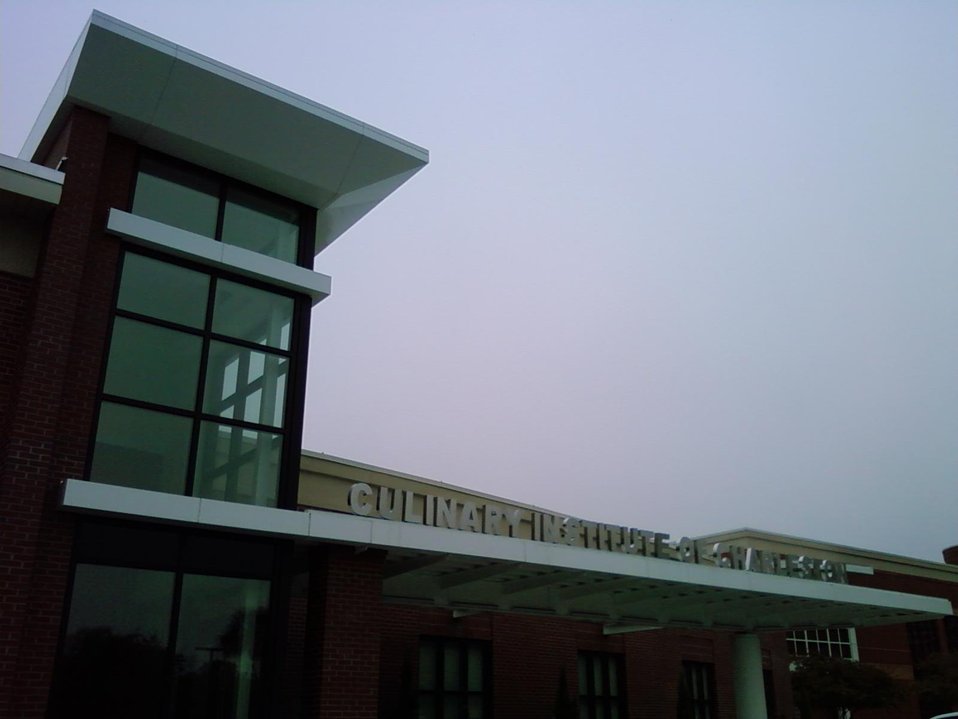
Field Hearing on Broadband Adoption 10-6-09